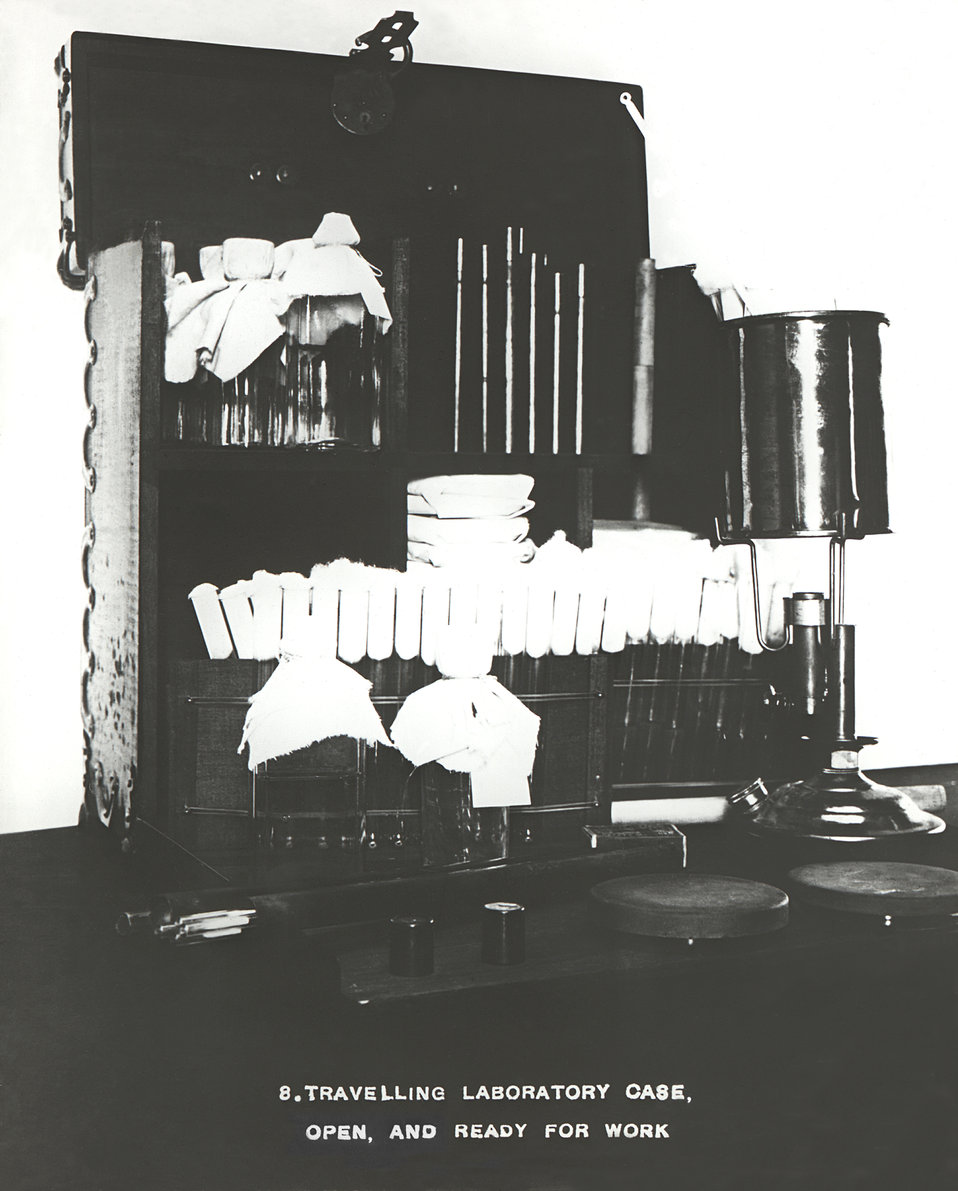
This 1916 photograph depicted a traveling laboratory case that had been opened, and its contents extracted, thereby, revealing the materials normally carried in this transportable water-sampling case. A view of the packed, closed case can be seen in PHIL #8503 and an image of the case opened, but filled so as to display its packed contents, and ready for transport, can be seen in PHIL #8504.